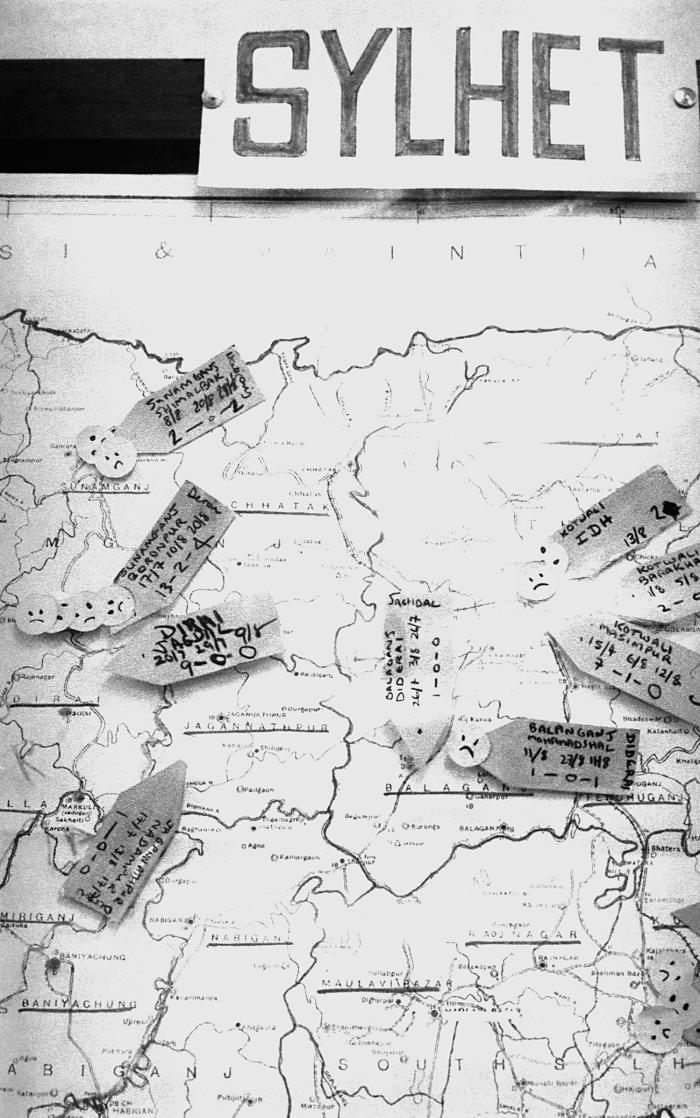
Sylhet is a district region in Bangladesh, and this map depicted the thana, and villages throughout the district. The flagged areas represented the villages in which smallpox cases had been uncovered. During the house to house searches, each one of the 12 million homes had to be visited, in order to show residents the smallpox case photograph, as well as to announce the money reward for anyone reporting a case, and to ask if they had seen or knew of any cases resembling the one pictured.